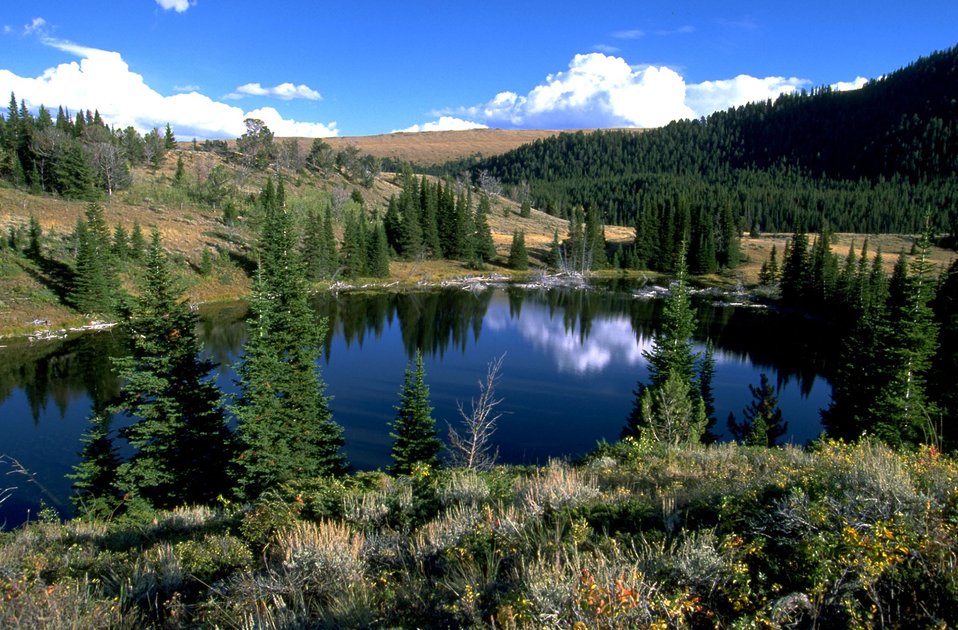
Scenic view of the reflection of the sky on a lake